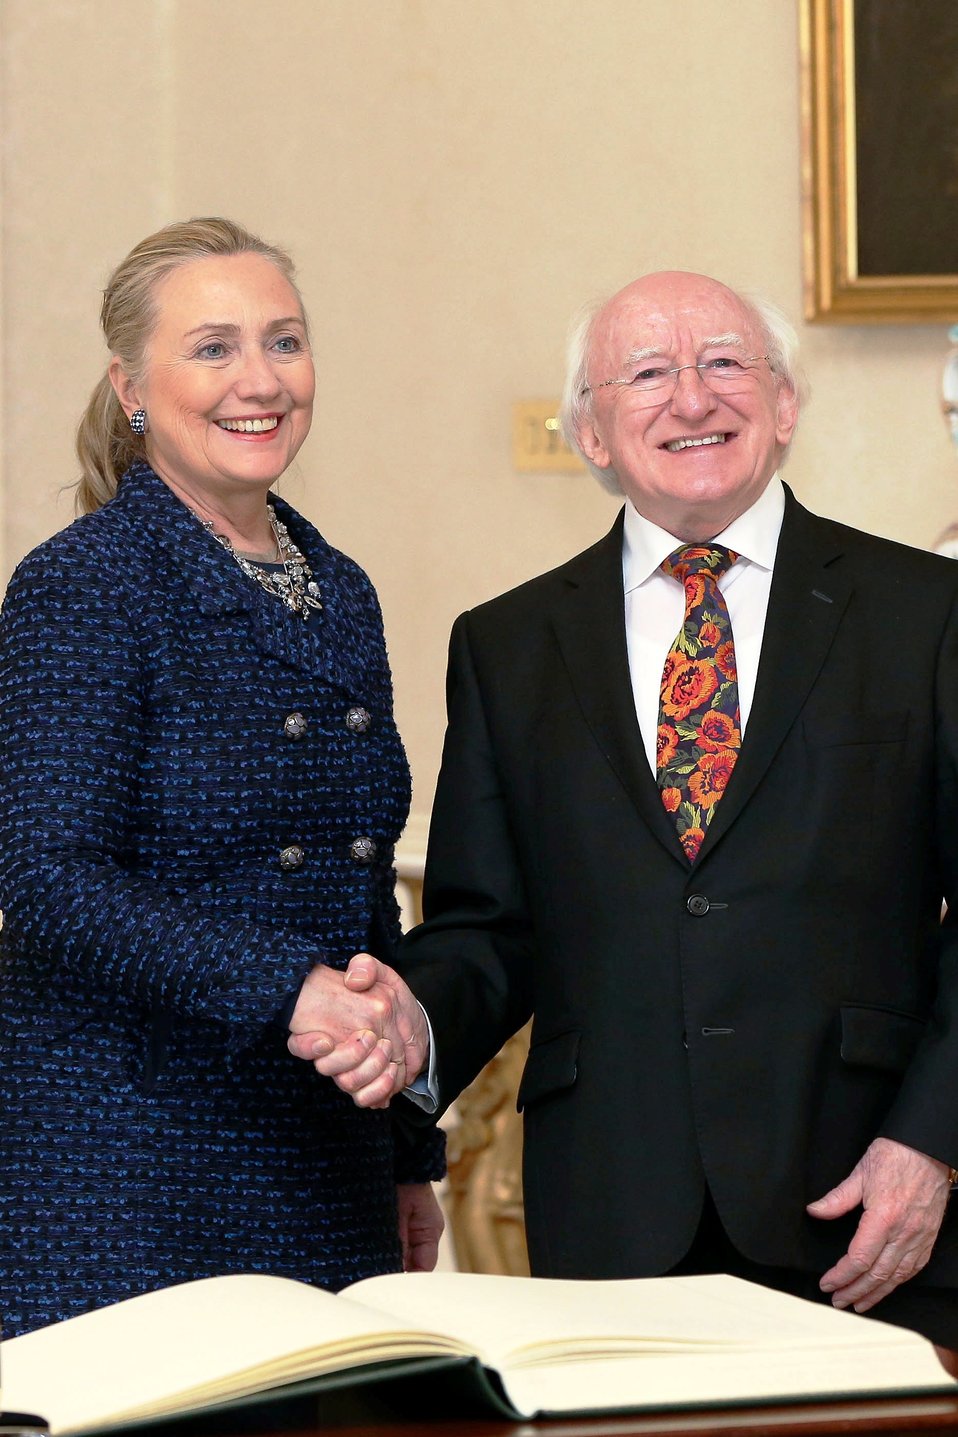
Secretary Clinton Meets With Irish President Higgins

U.S. Secretary of State Hillary Rodham Clinton meets with Irish President Michael D. Higgins at Aras An Uachtarain in Dublin, Ireland, December 6, 2012.